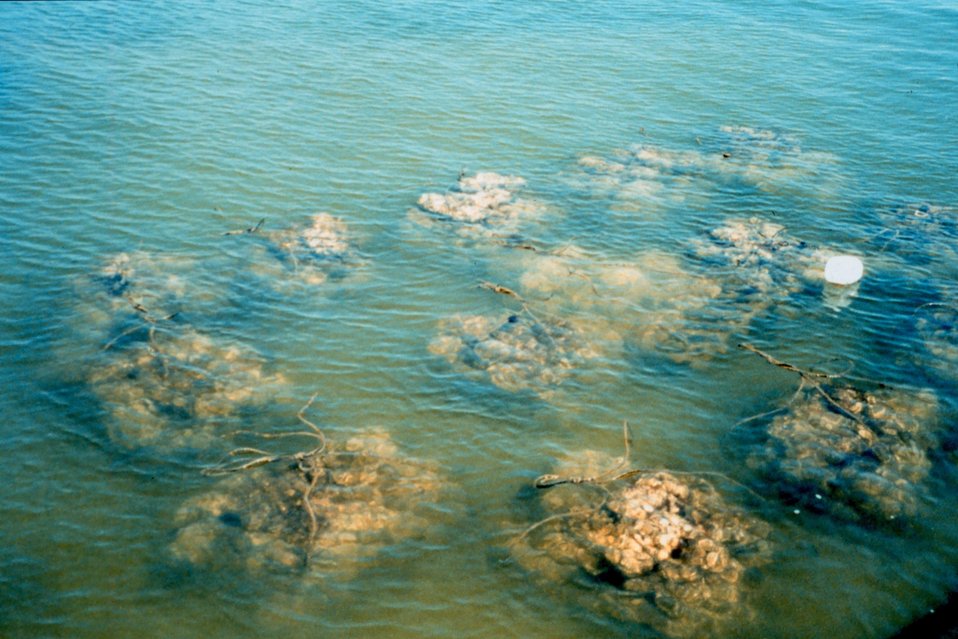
Shells containing oyster spat raised by the Oyster Recovery Partnership are bagged and placed on pallets to grow before being transplanted to a designated oyster reef elsewhere in the Chesapeake Bay.